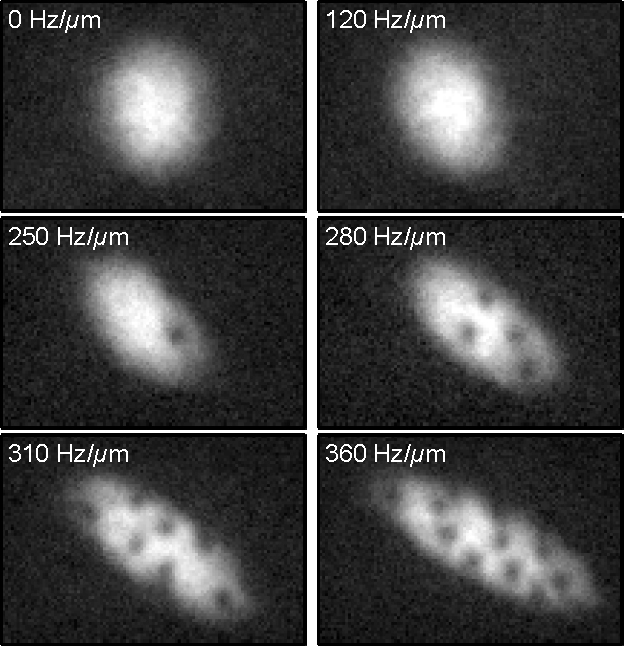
Synthetic Magnetic Fields--vortices

A harbinger of the synthetic magnetic fields is the formation of vortices (spots). These spots, the number of which increases with increasing synthetic field, mark the points about which atoms swirled with a whirlpool-like motion. The measurement units in each panel indicate the size of the external magnetic field gradient applied to the gas of atoms, with larger external fields producing more vortices.